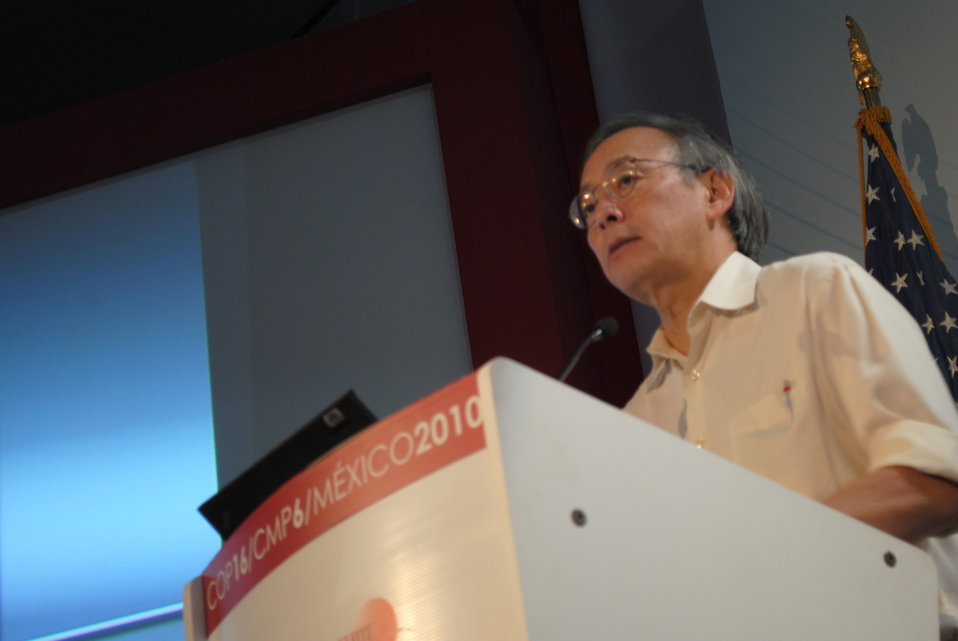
Secretary Chu Addresses the U.S. Center

U.S. Secretary of Energy Steven Chu addresses the U.S. Center at COP-16 in Cancun, Mexico, on December 6, 2010.